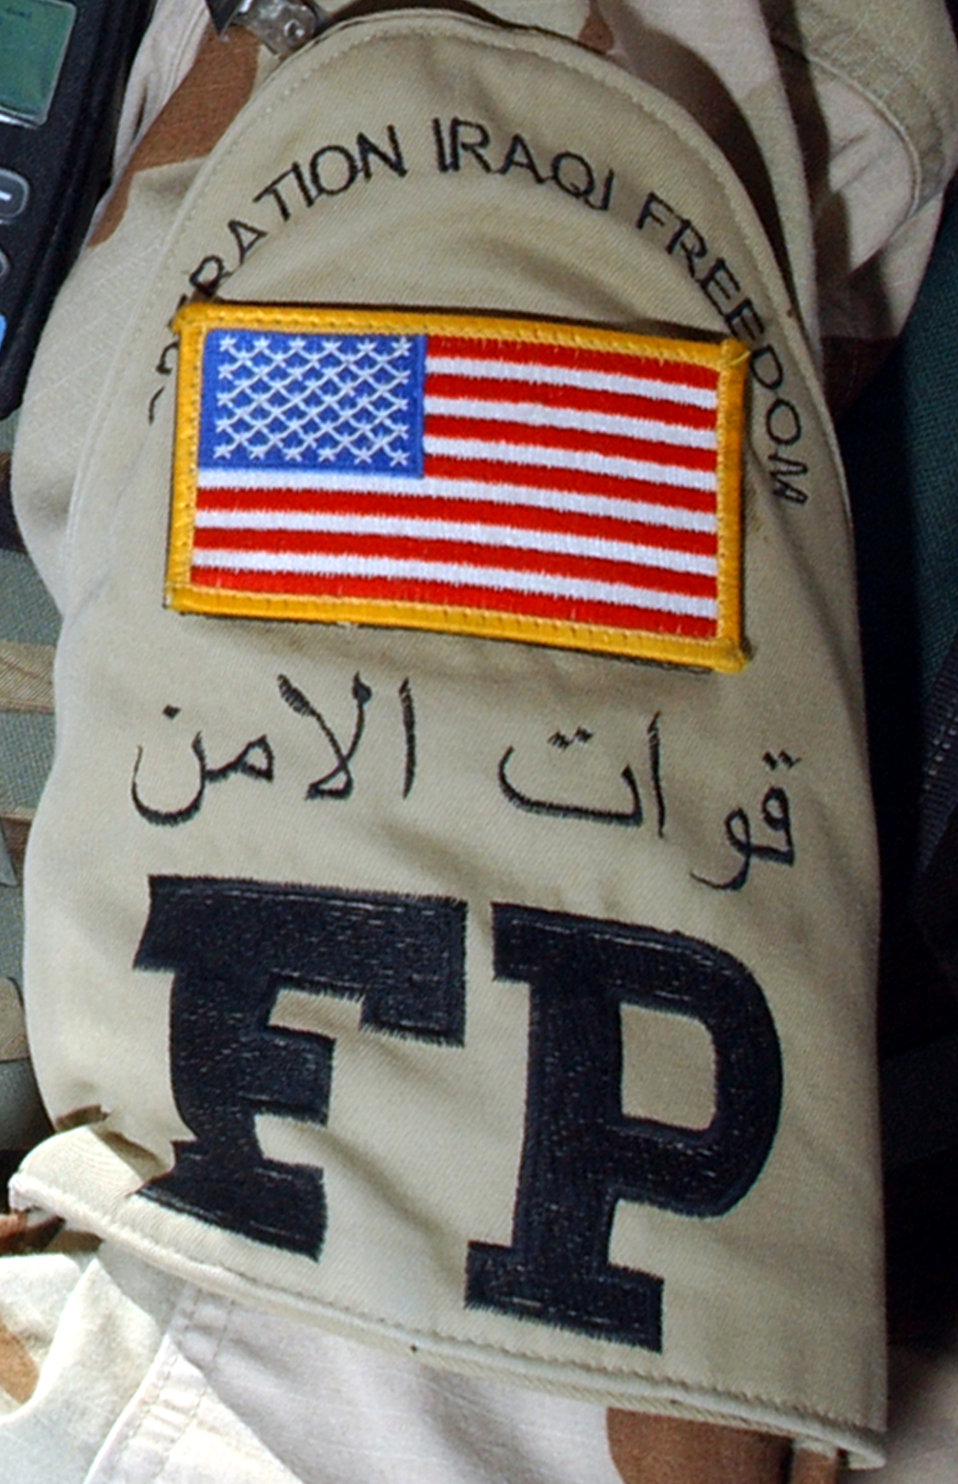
Distinctive armbands

TALLIL AIR BASE, Iraq -- Airmen assigned to the 407th Expeditionary Civil Engineer Squadron's force protection flight here wear distinctive armbands while keeping watch over third-country and local-national workers.